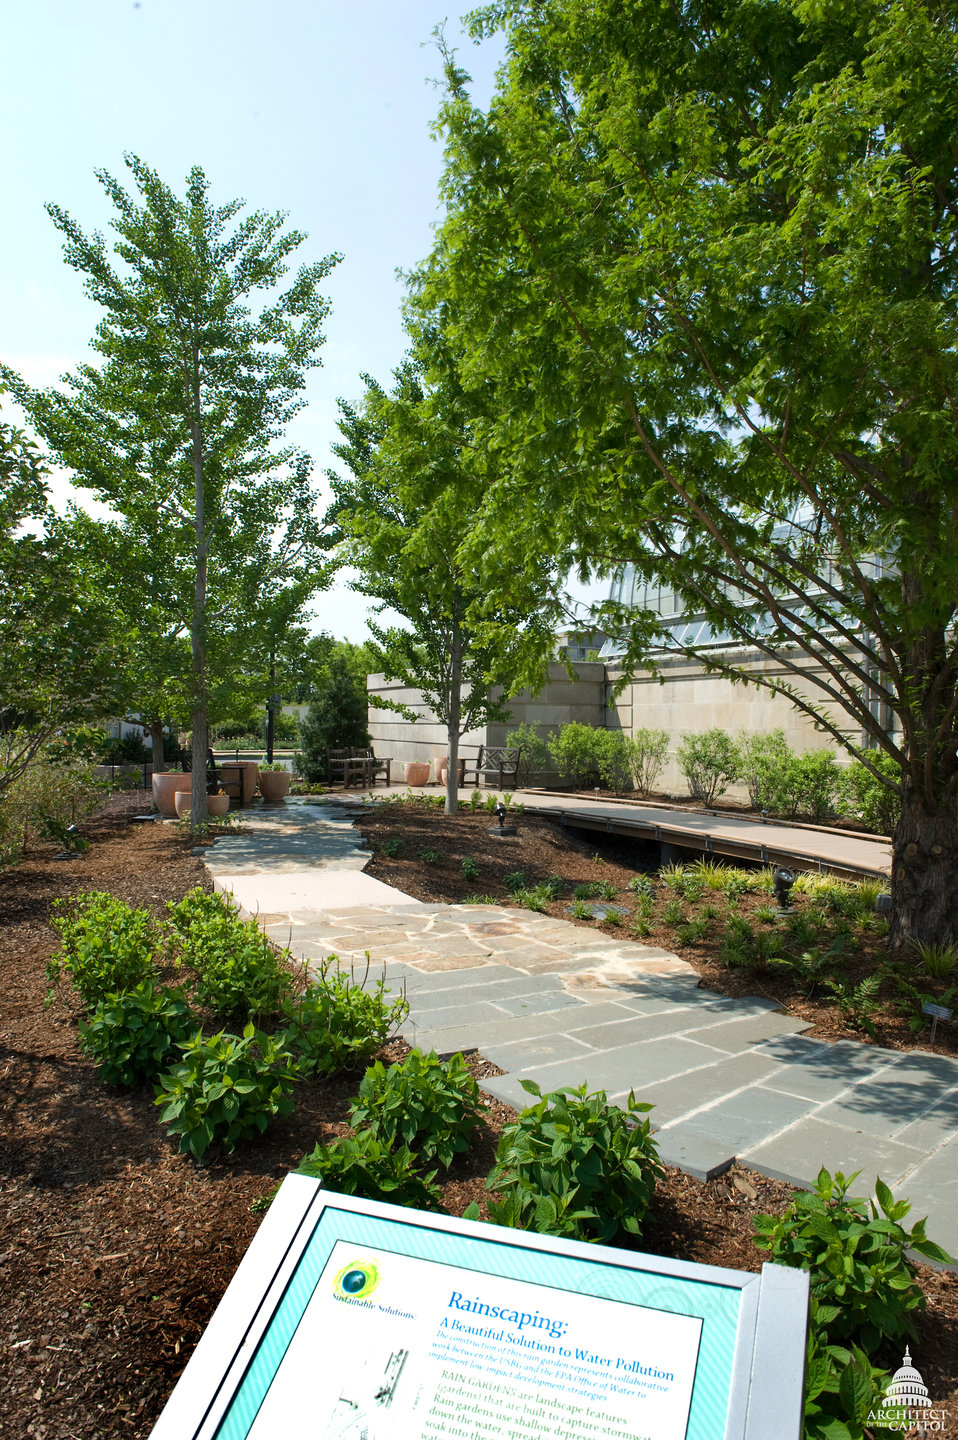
Rain Garden at the U.S. Botanic Garden